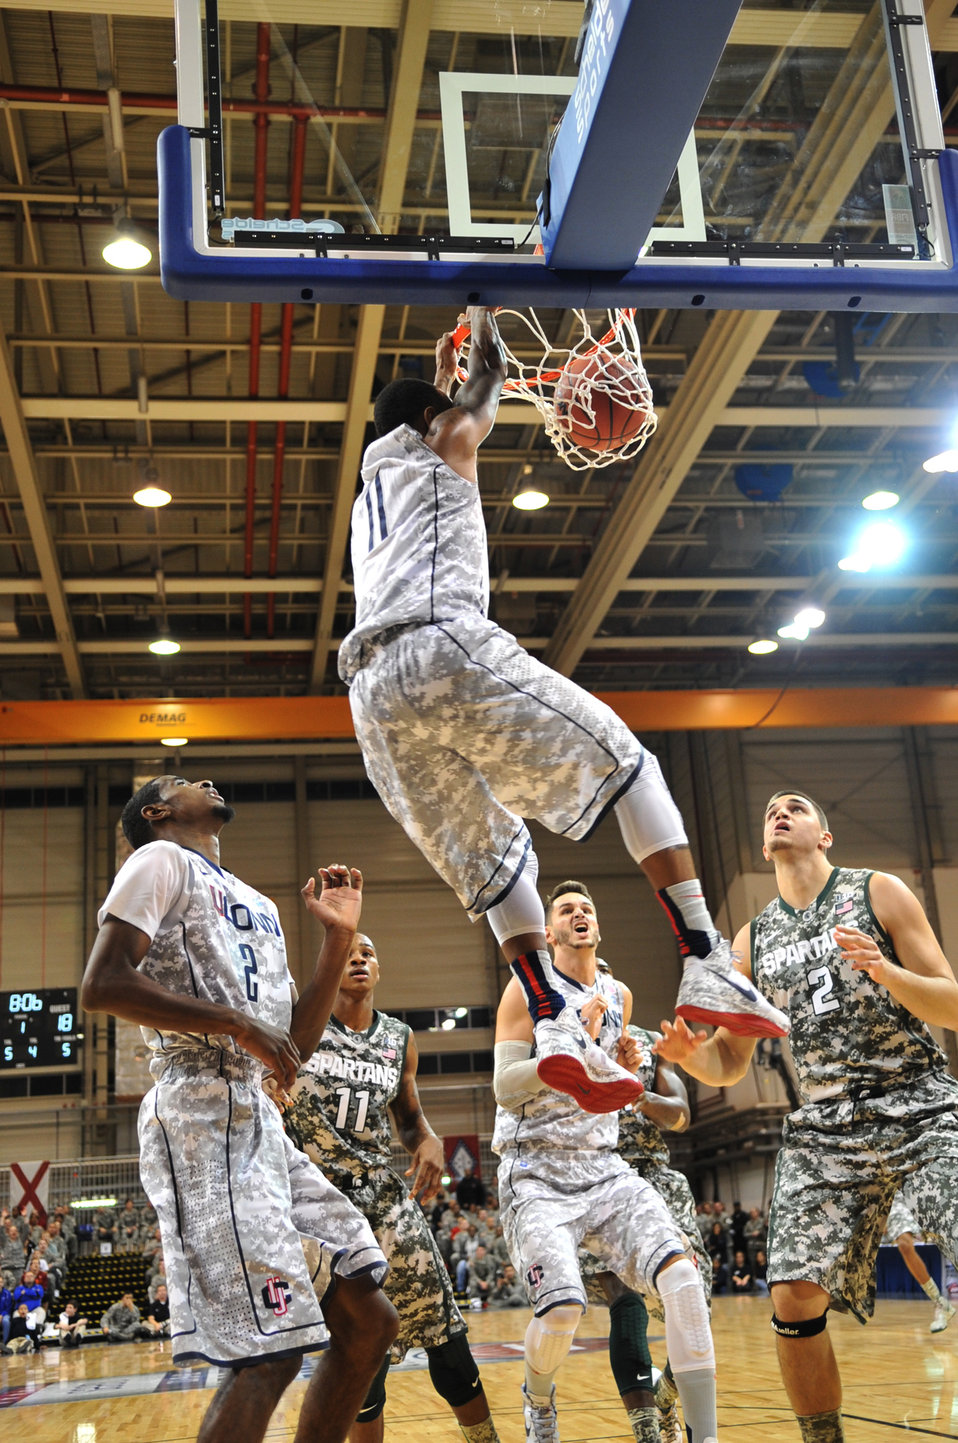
Armed Forces Classic

University of Connecticut player Ryan Boatright dunks the ball against the Michigan State Spartans during t the Armed Forces Classic basketball game at Ramstein Air Base, Germany, Nov. 10, 2012. Connecticut overcame Michigan 66-62.